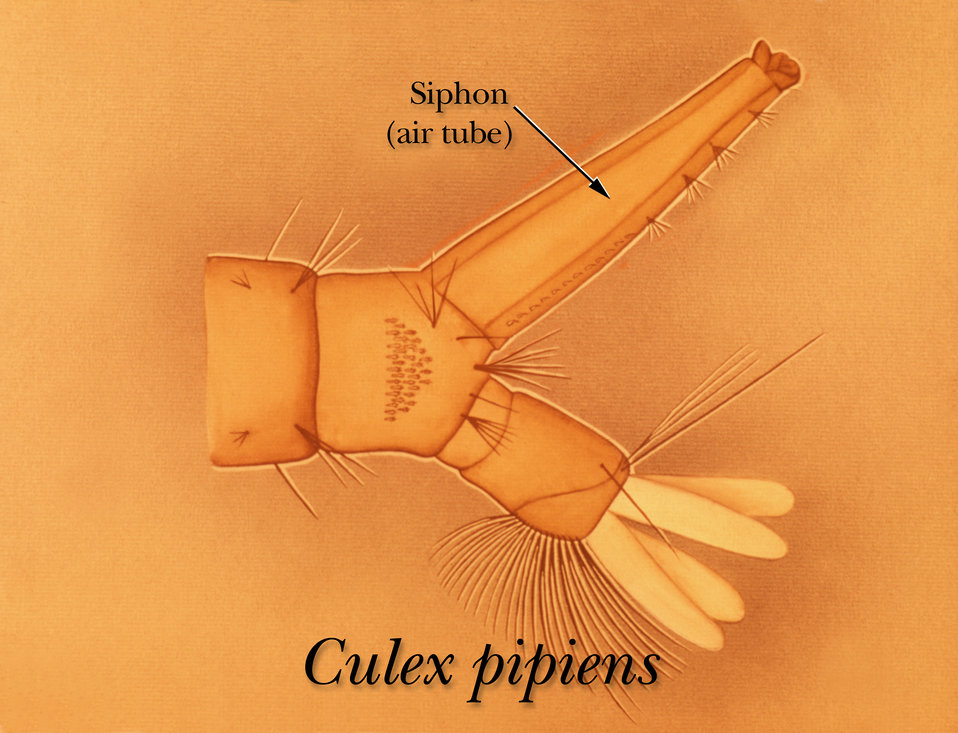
An illustration identifying the siphon on the terminal segment of a Culex pipiens mosquito larva.